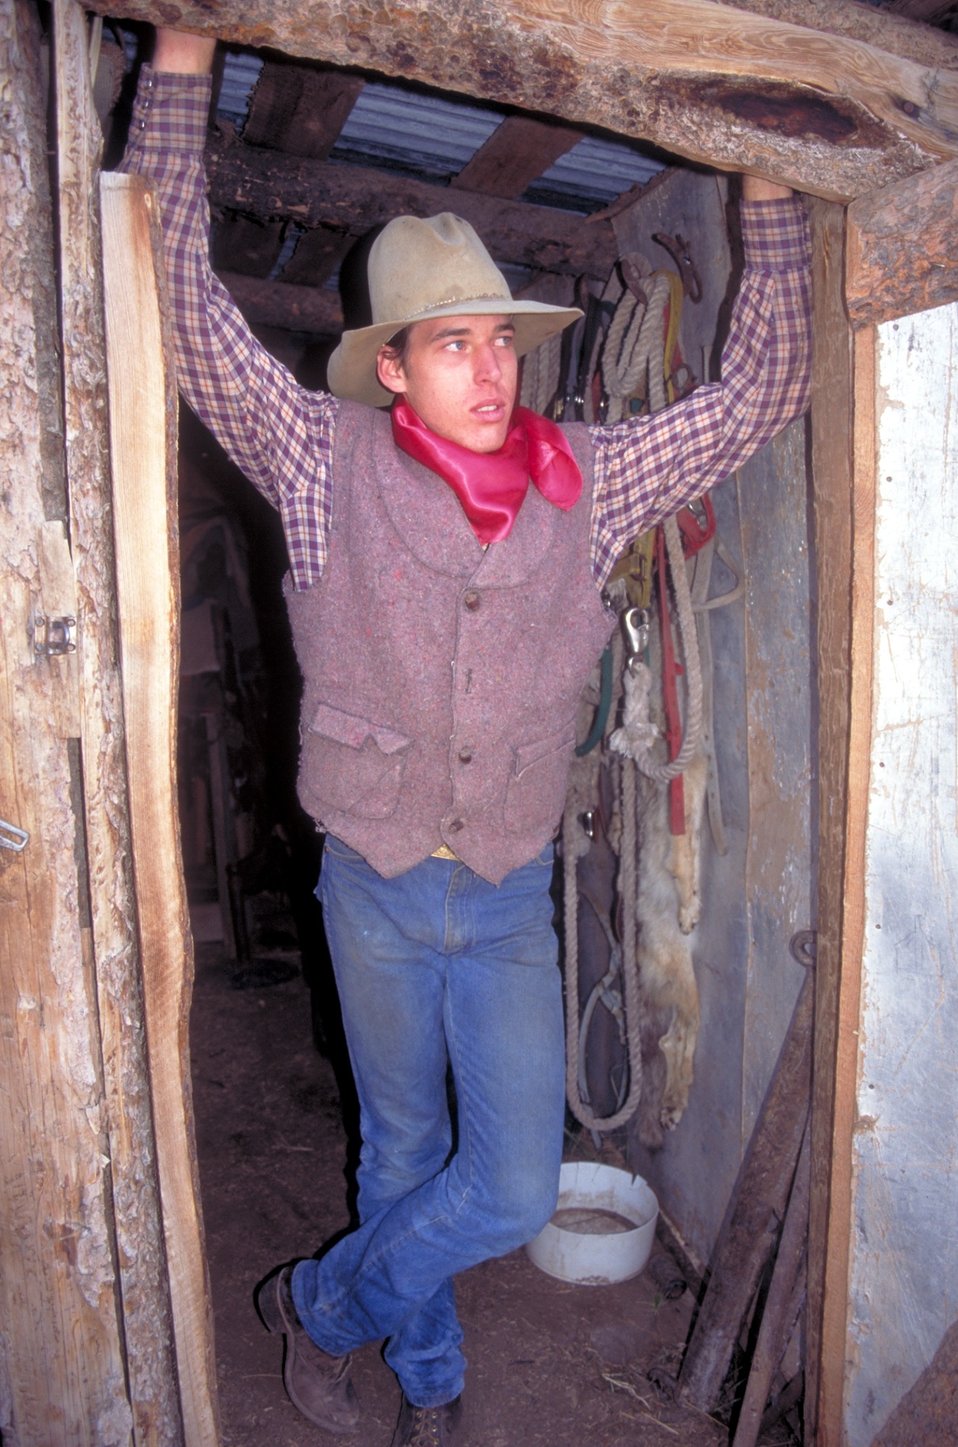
Working cowboys living near Vernal, Utah.